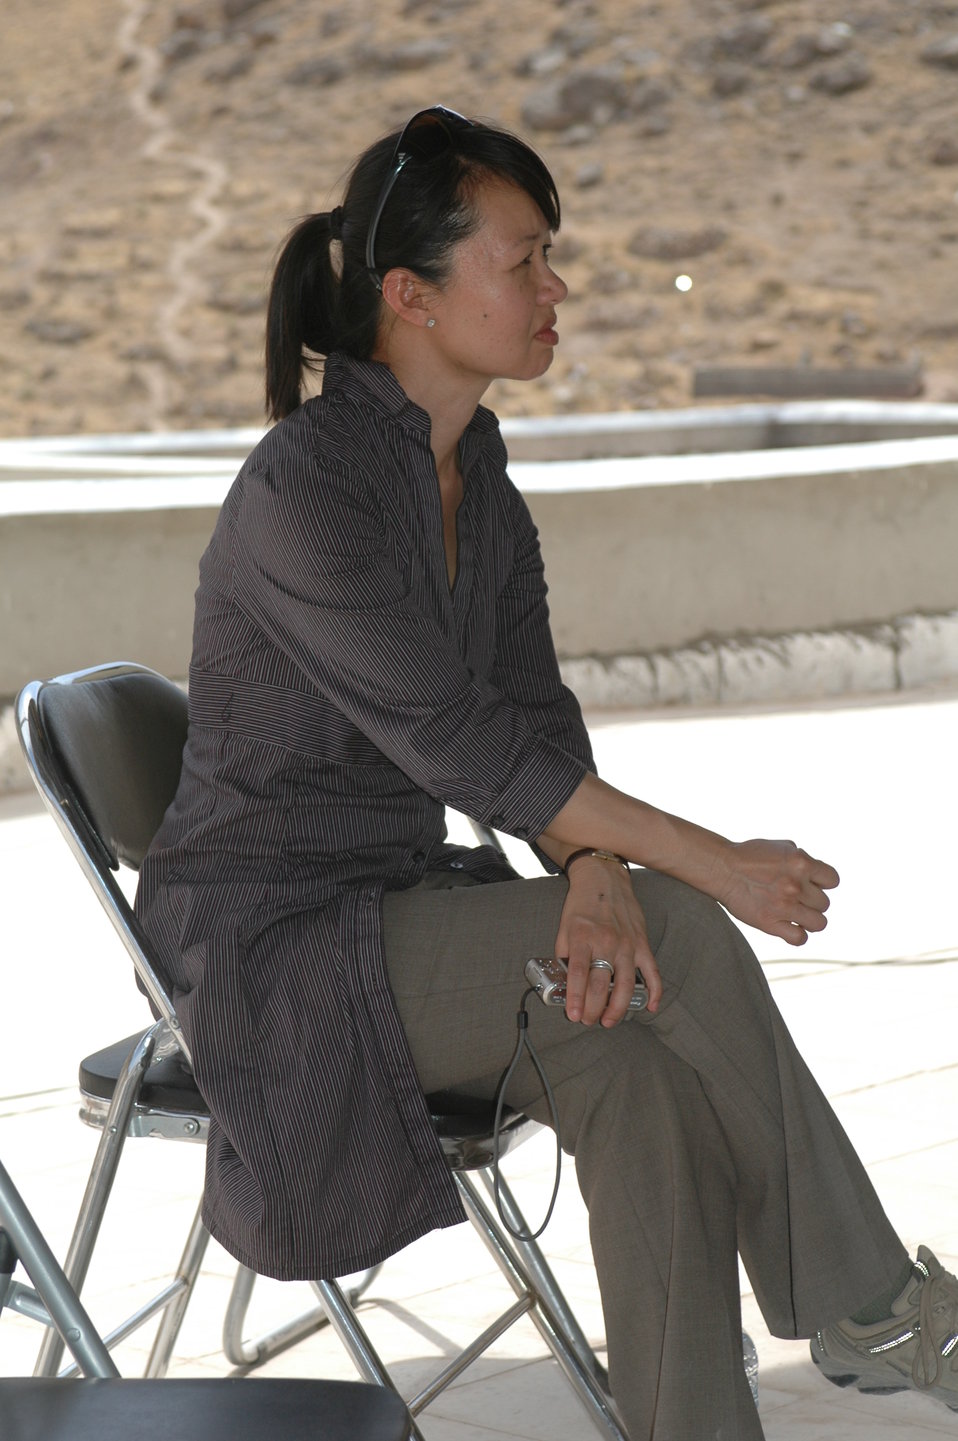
Dr Shah Visits Kandahar April 9, 2010